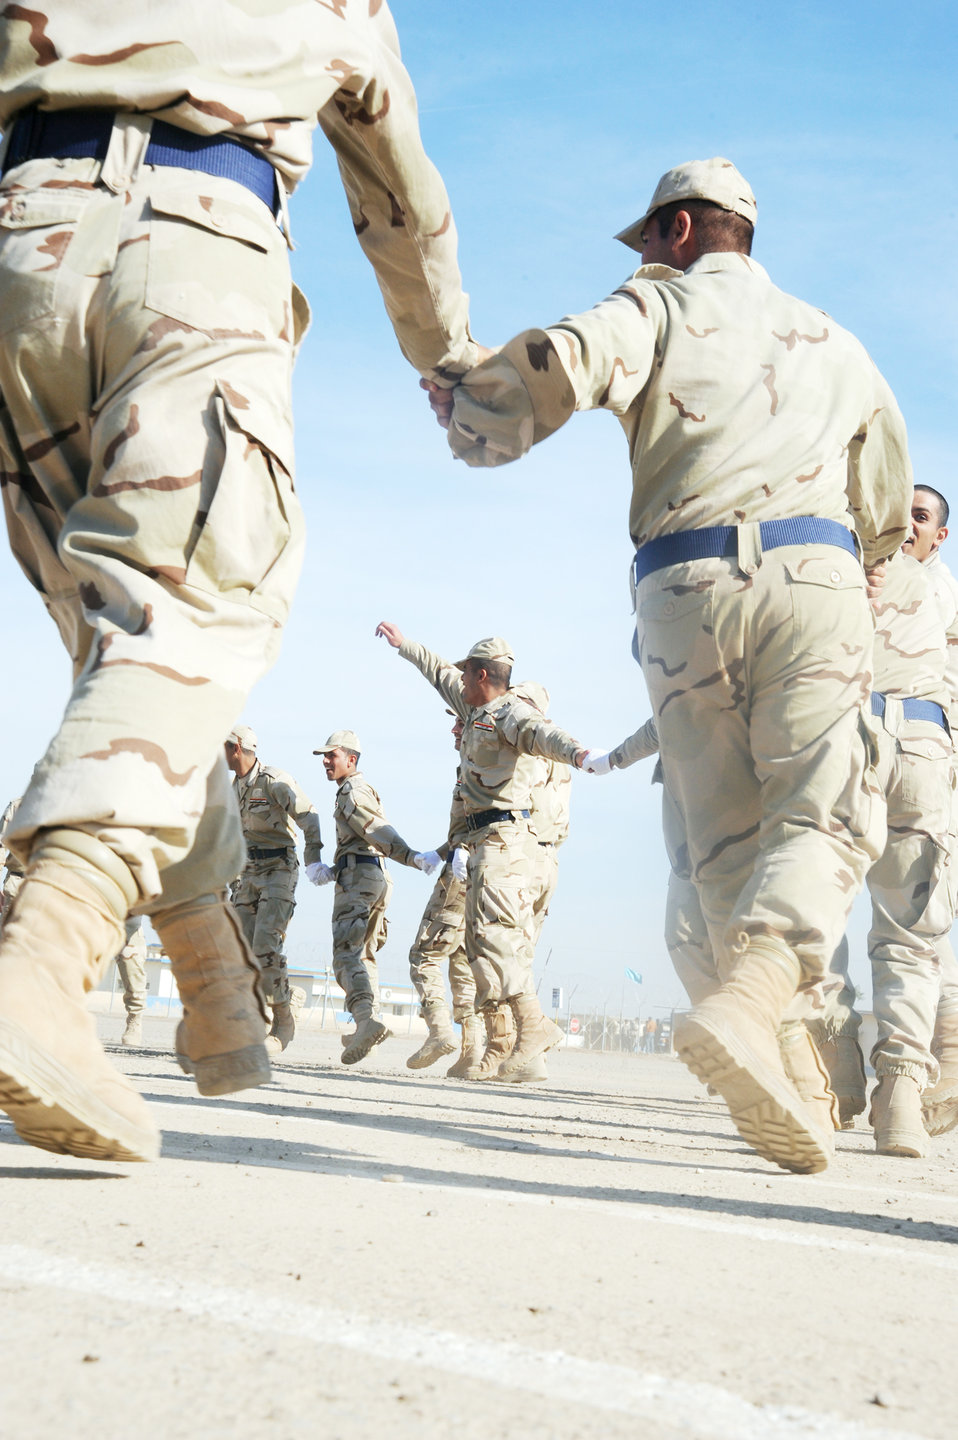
New recruits get a leg up

Iraqi air force recruits celebrate with singing and dancing after their graduation from the basic military training Top Off course at the Iraqi Air Force Training School Dec. 28, 2009, at Camp Taji, Iraq. The Top Off course teaches recruits about rank structure, leadership and what kind of benefits they will receive.